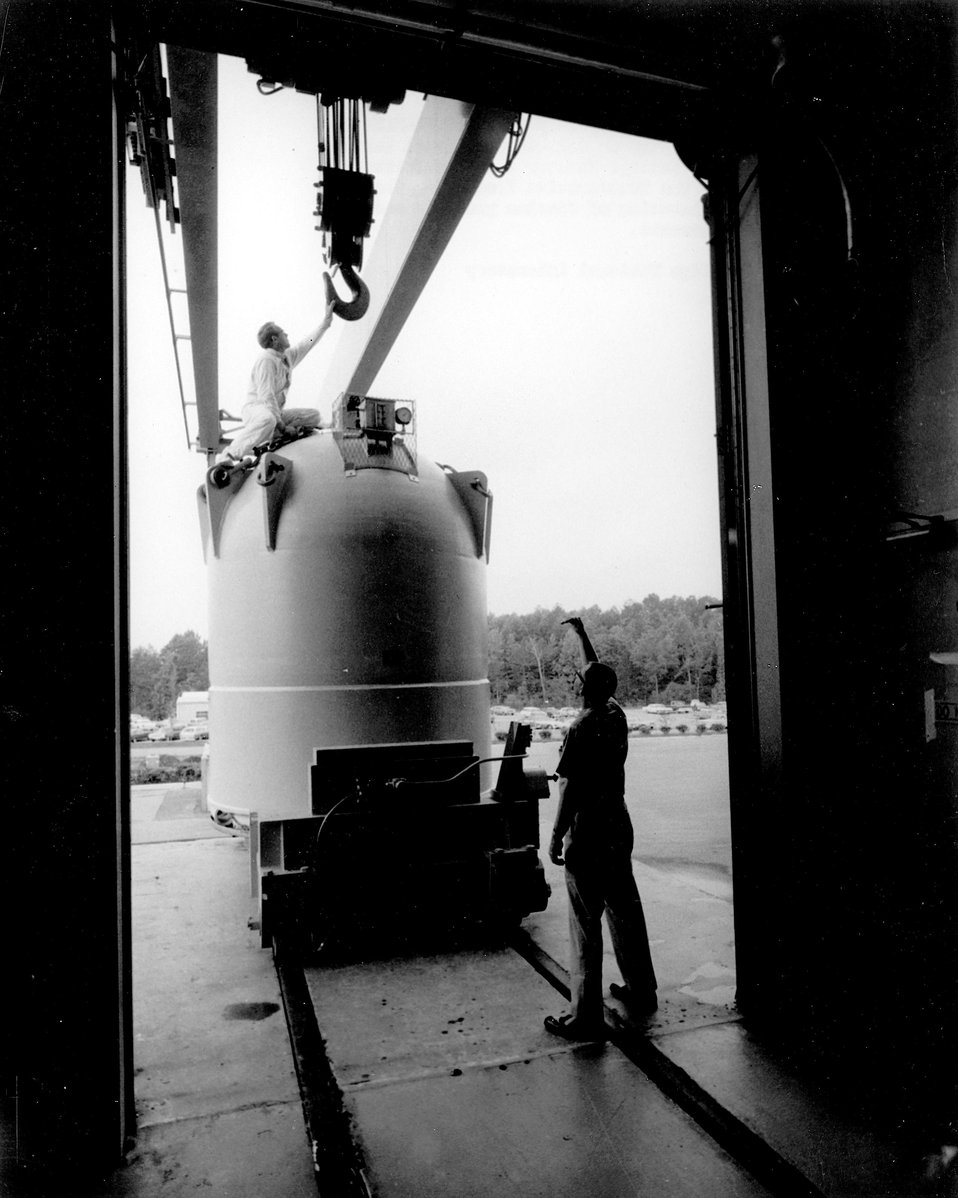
HFIR TARGET ROD CARRIER...Target rods irradiated in Oak Ridge National Laboratory's High Flux Isotope Reactor are transferred in this carrier to the Transuranuim Processing Plant for chemical separation of fission products and transuranium elements. c. 1968